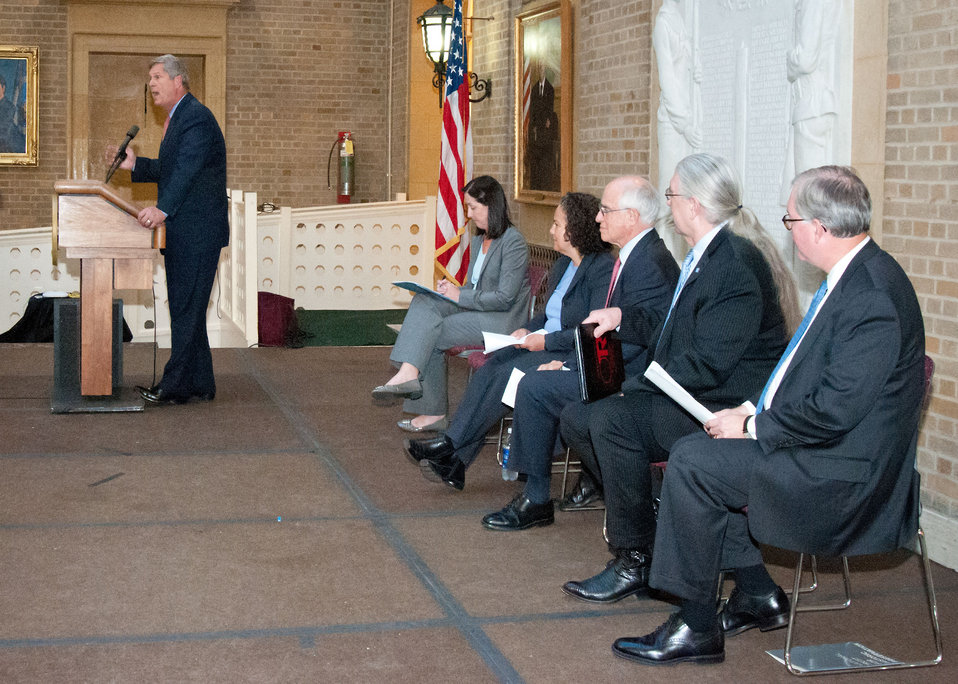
From left: Agriculture Secretary Tom Vilsack, Mary Wagner, Associate Chief, U.S. Forest Service, Nancy Sutley, Chair of the White House Council on Environmental Quality, Harris Sherman, Under Secretary, Natural Resources and Environment, Butch Blazer, Deputy Under Secretary, Natural Resources and Environment and David Brown, Executive Vice President, National Trust for Historic Preservation. Secretary Vilsack and the invited speakers explained the discipline and perseverance of many people and organizations at the Chimney Rock National Monument Dedication Celebration held at the United States Department of Agriculture in Washington, D.C., on Monday, Sept. 24, 2012. President Barack Obama designated Chimney Rock in the San Juan National Forest in Southwest Colorado as a national monument on Friday, Sept. 21, 2012. A move that will help preserve 4,726 acres in southwestern Colorado surrounded by the Southern Ute Indian Reservation. The land will be managed by the U.S. Department of Agriculture Forest Service with assistance from local tribes. Chimney Rock was home to the Pueblo People 1,000 years ago and is culturally significant for Native American tribes.